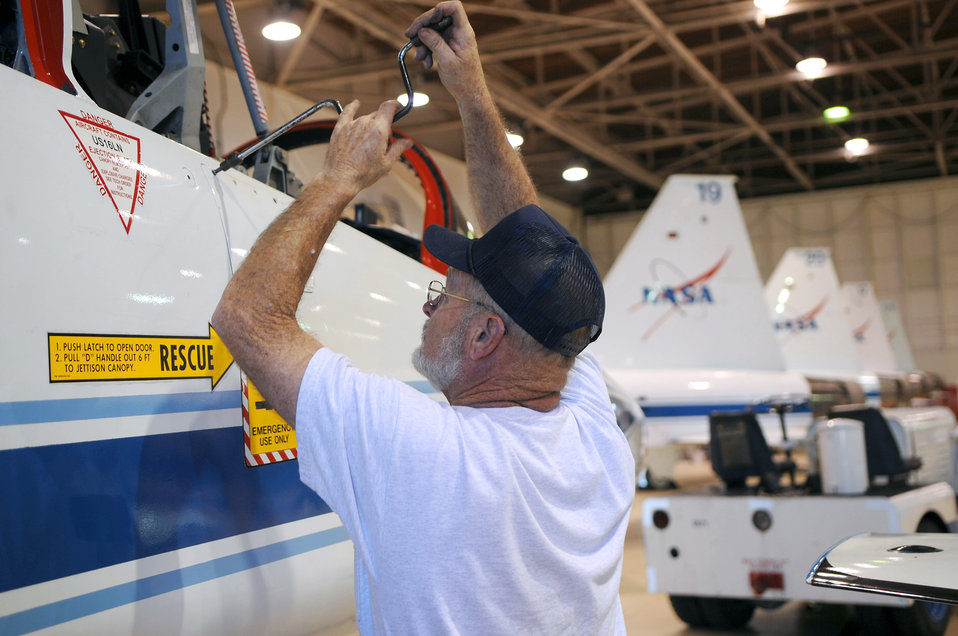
NASA trains pilots to fly high

Mike Parrott performs a routine maintenance check on a NASA T-38 Dec. 2 in Ellington Field, Texas. Mr. Parrott is an unscheduled maintenance crew leader for NASA.